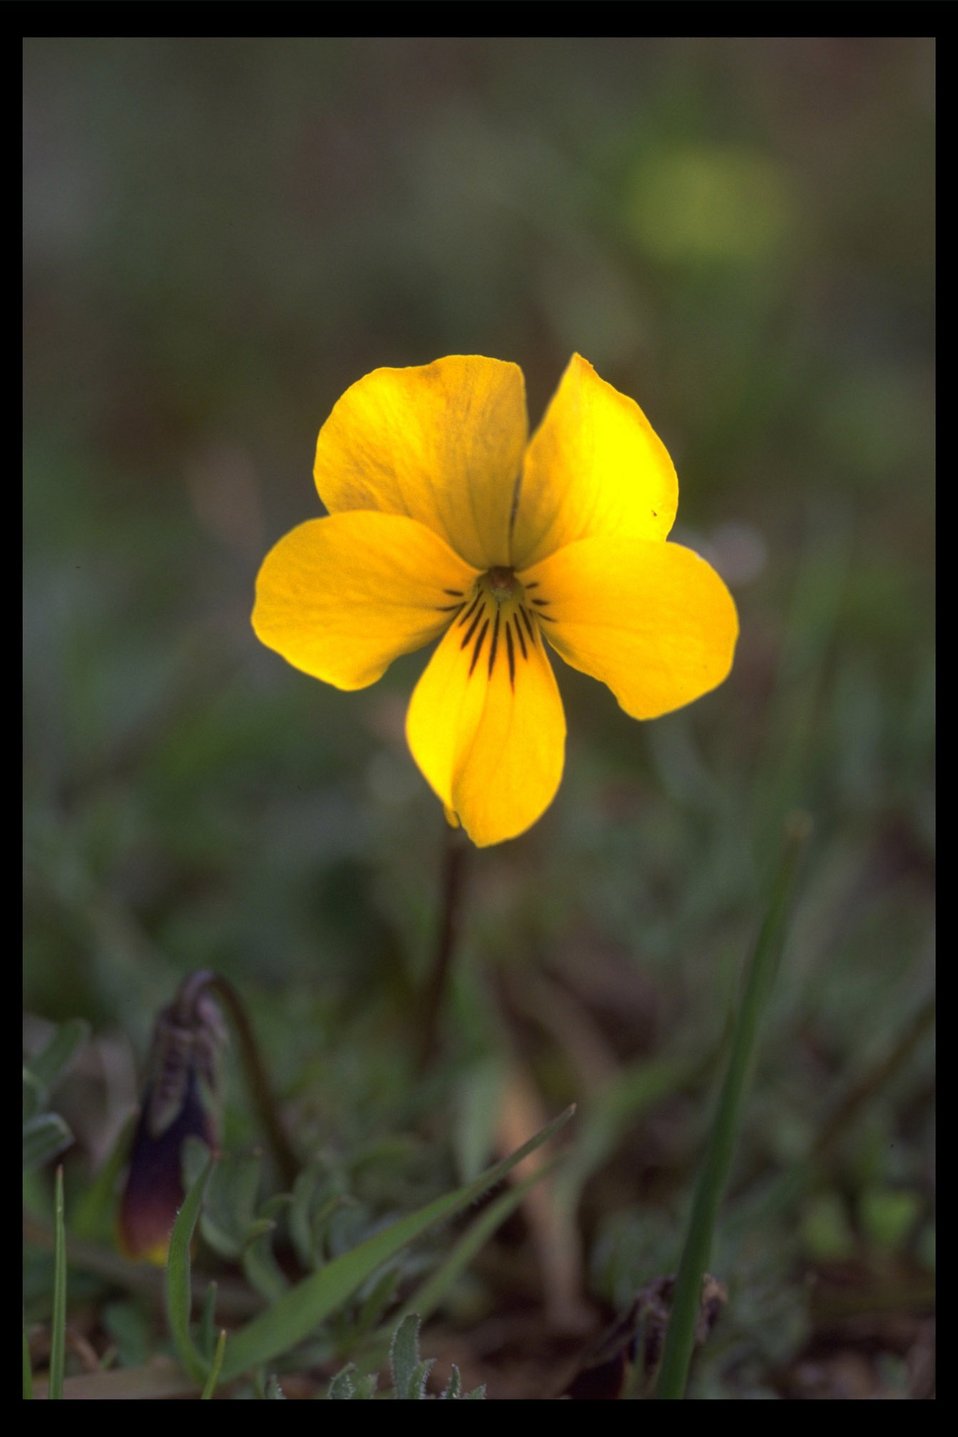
Douglas Violet (Viola douglasii) in the Agate Desert.